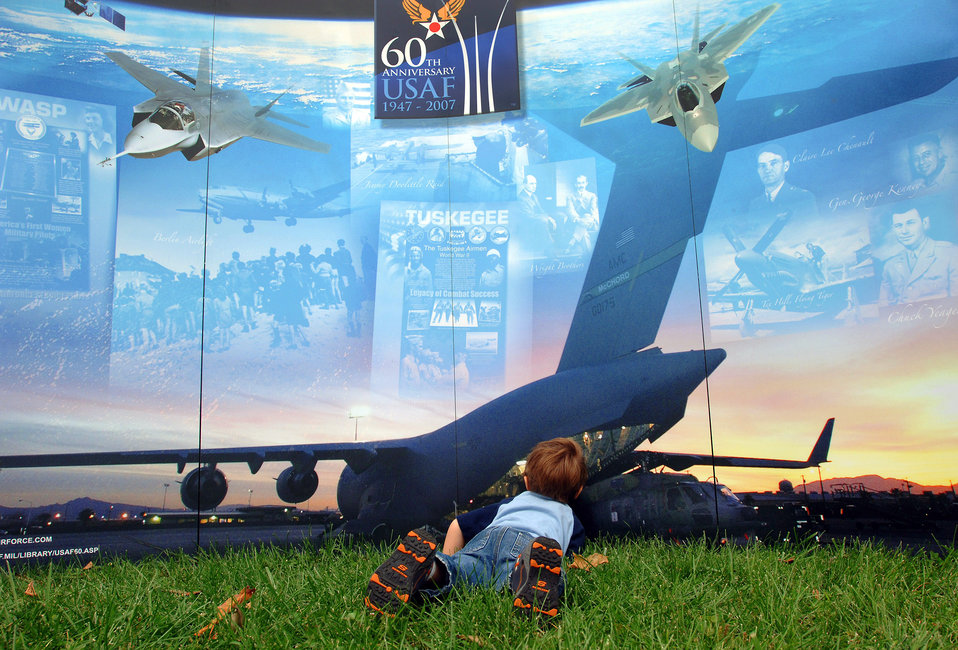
Unique perspective

Four year-old Kiaden takes a closer look inside a 60th Anniversary Air Force display during Air Force New England Science Day Aug. 21 in Concord, N.H.